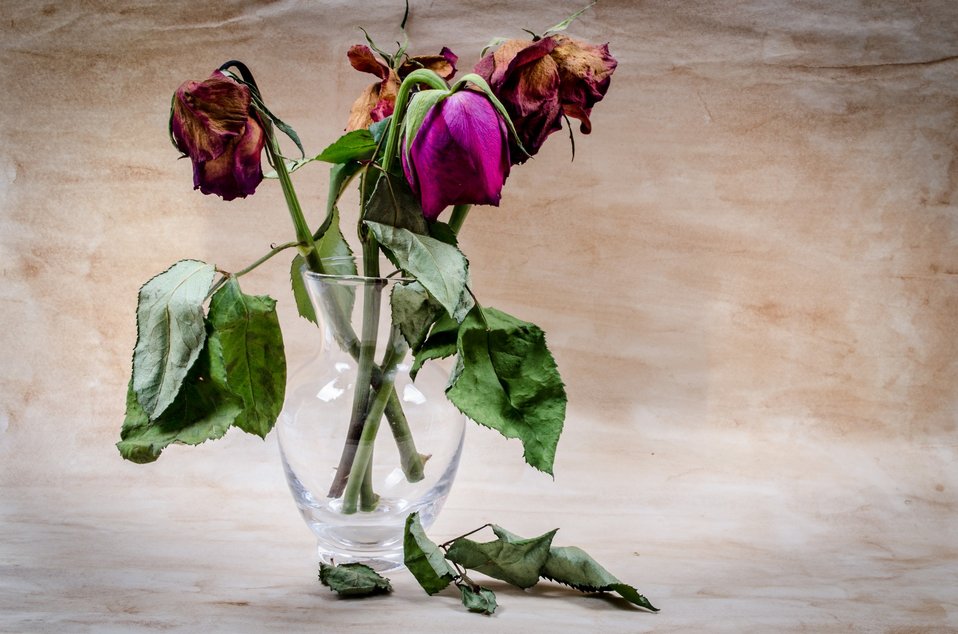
Dried red roses.